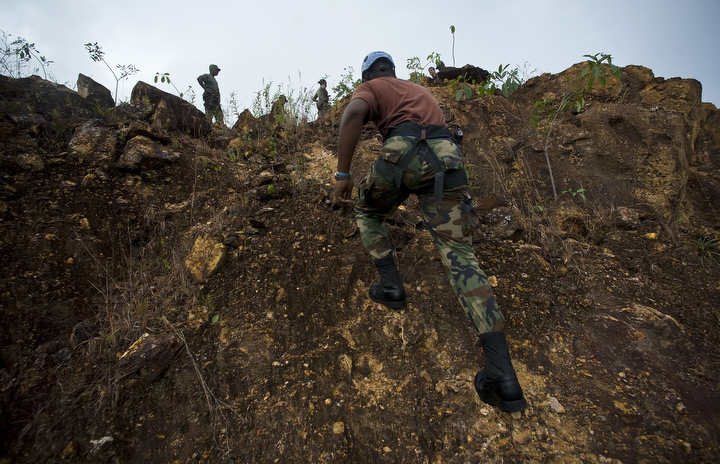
St. Lucia police team with Airmen during Operation Southern Partner

Members of the Royal St. Lucian police force's special wervice unit make their way up a step incline to execute basic mountaineering rescue procedures learned during Operation Southern Partner June 1 at La Toc, St. Lucia.